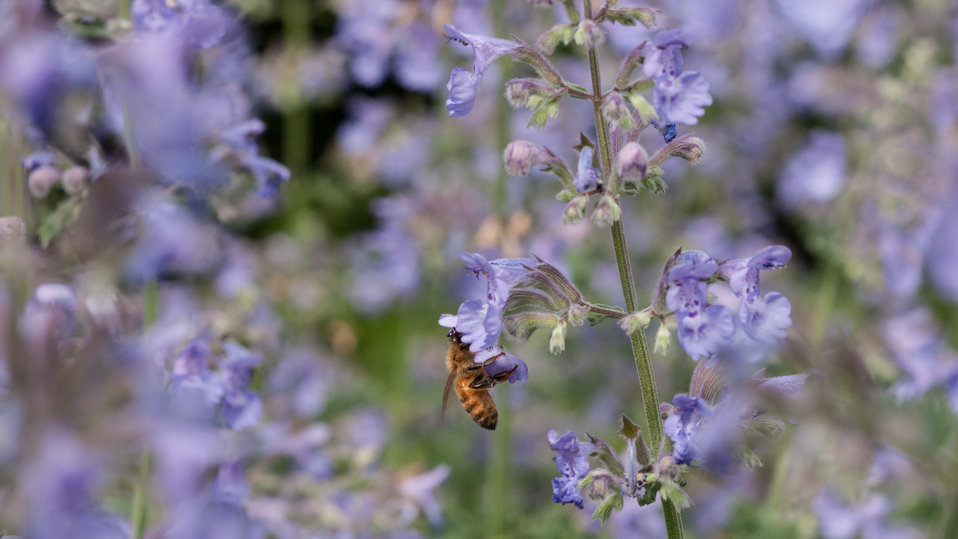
A honey bee is attracted to flowers in the U.S. Department of Agriculture People's Garden, pollinator garden, outside the headquarters' Whtten Building in Washington, D.C., on Wednsday, May 22, 2013.